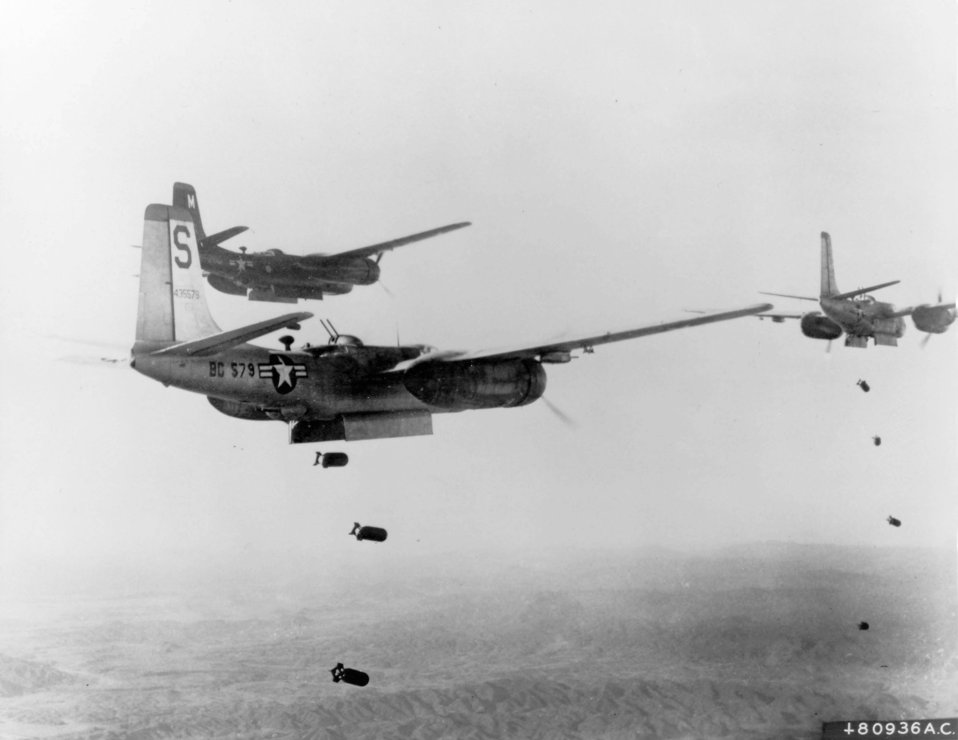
B-26s

1950's -- B-26s bombing North Korea